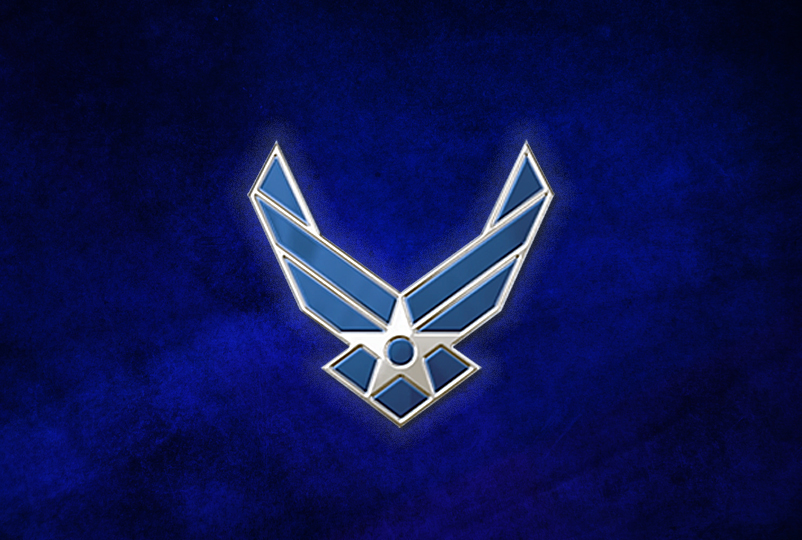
Officials announce civilian workforce hiring freeze